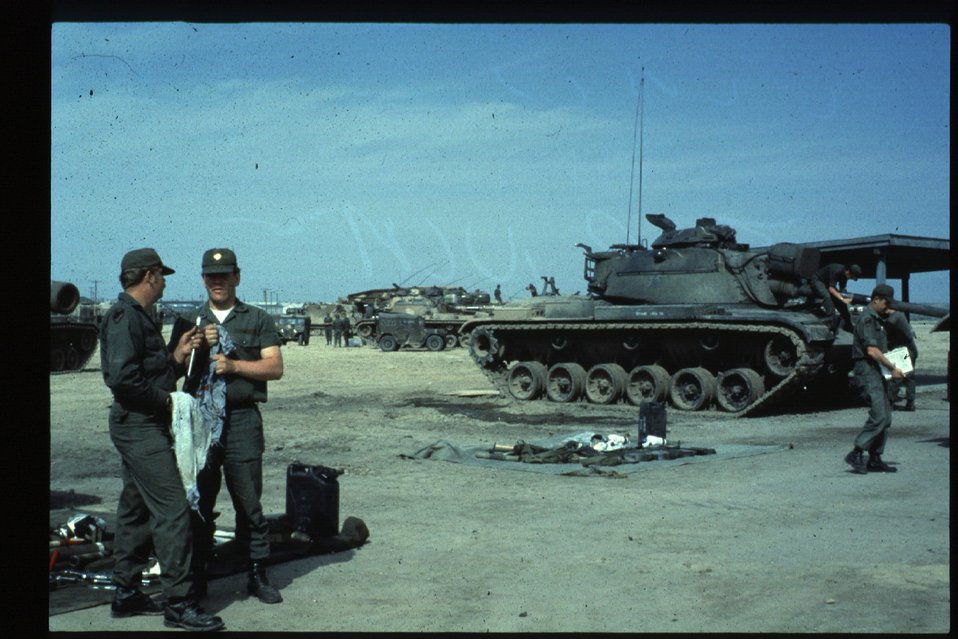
Idaho National Guard BOP NCA Birds of Prey National Conservation Area Owyhee Field Office LSRD Lower Snake River District